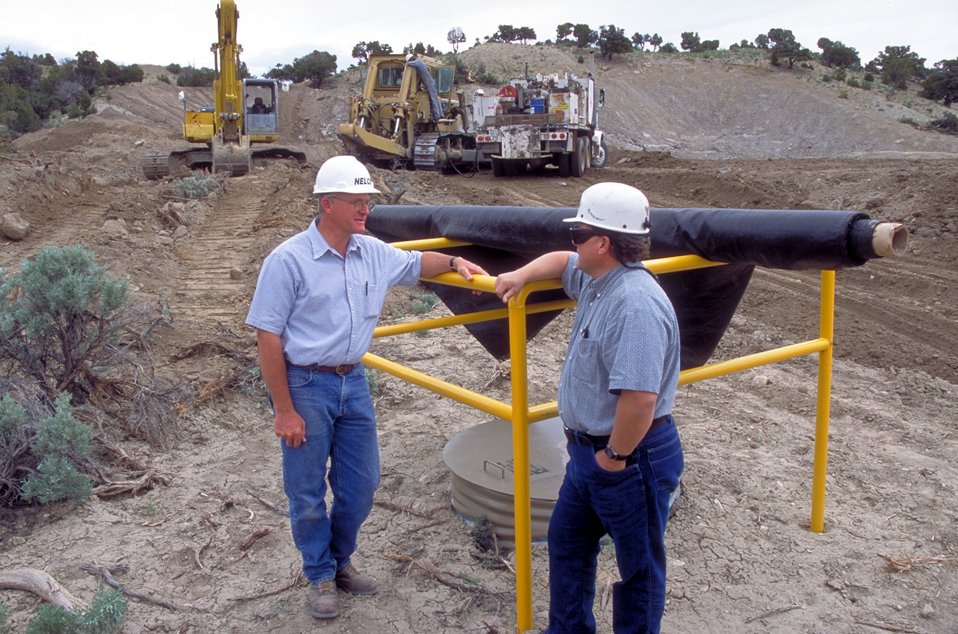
Building a drill pad for coal bed methane production near price, Utah.